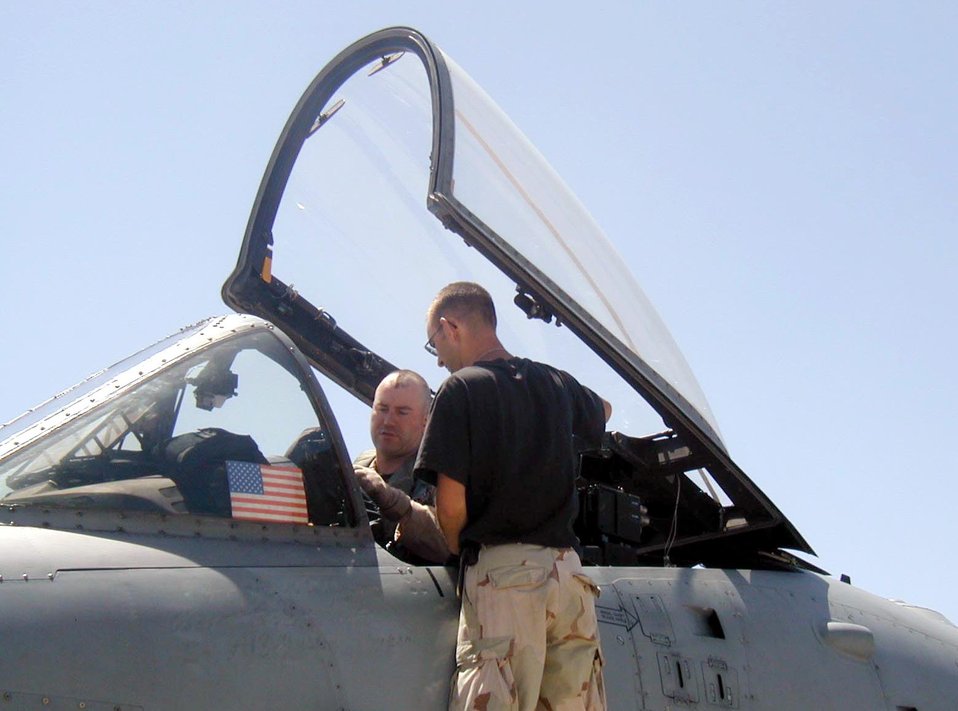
New arrivals

OPERATION ENDURING FREEDOM (AFPN) -- Tech. Sgt. Richard Silk talks to an A-10 Thunderbolt II pilot from Spangdahlem Air Base, Germany, who just arrived at Bagram AB, Afghanistan. Silk is an A-10 crew chief from the Maryland Air National Guard. About 150 people and eight A-10s deployed to Bagram from Spangdahlem to assume the close-air support mission.